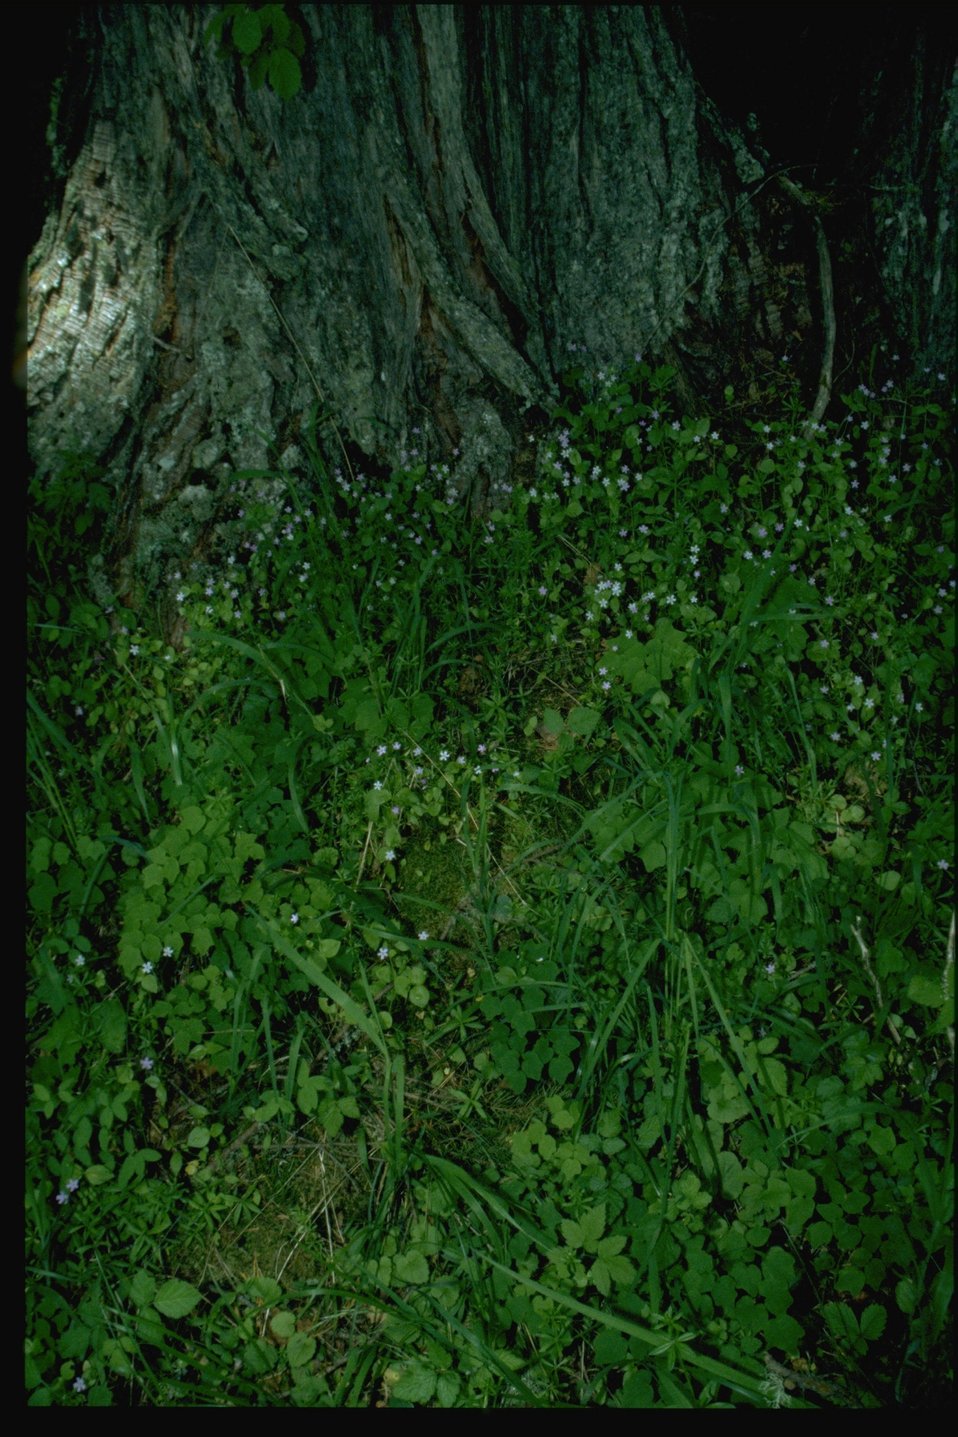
Farshot of Claytonia sibirica.